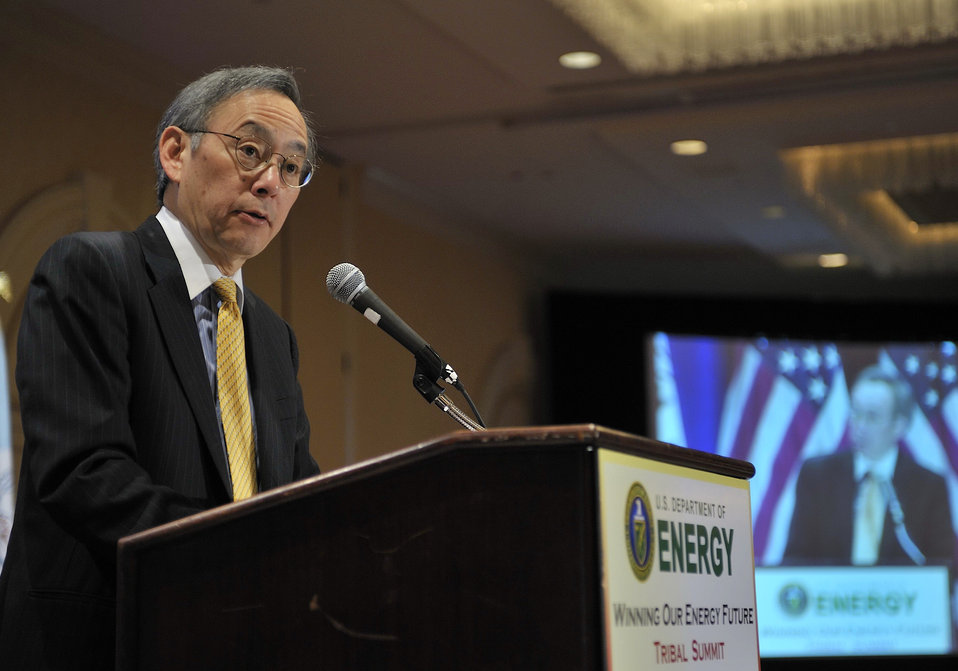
Tribal Energy Summit

Secretary Chu delivers DOE Tribal Summit Opening Speech on May 5th 2011.